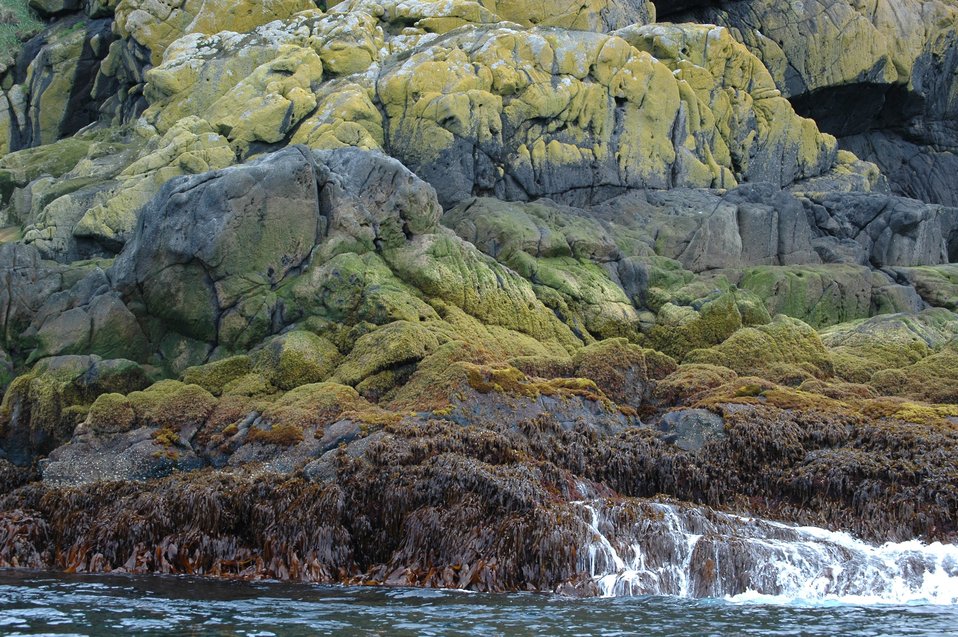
Haycock Rock